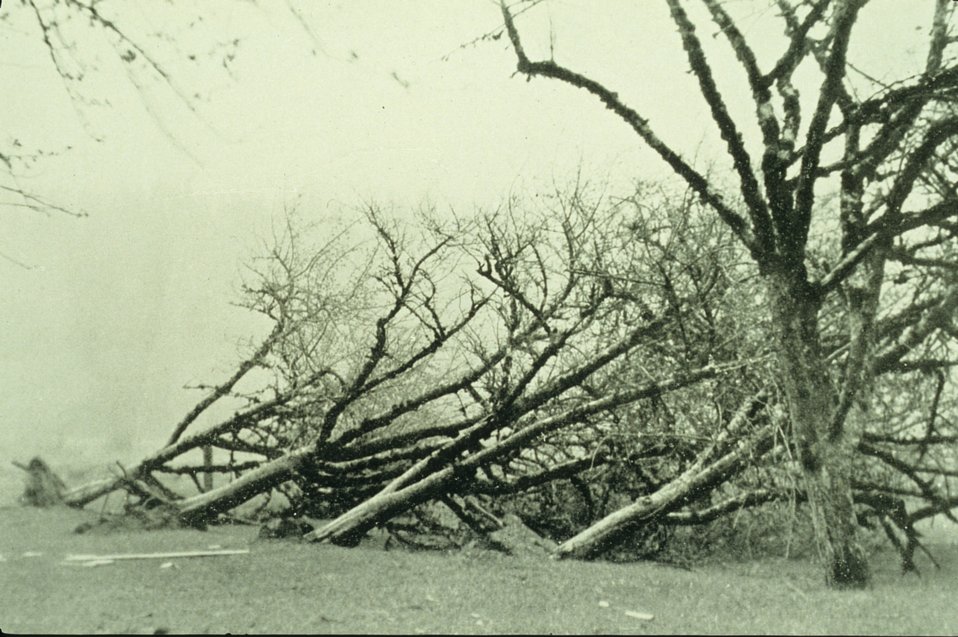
Uprooted trees caused not by a tornado but by a freak northeast gale bringing a great dust storm to Washington and Oregon. In: 'Monthly Weather Review,' May 1931, p. 198.